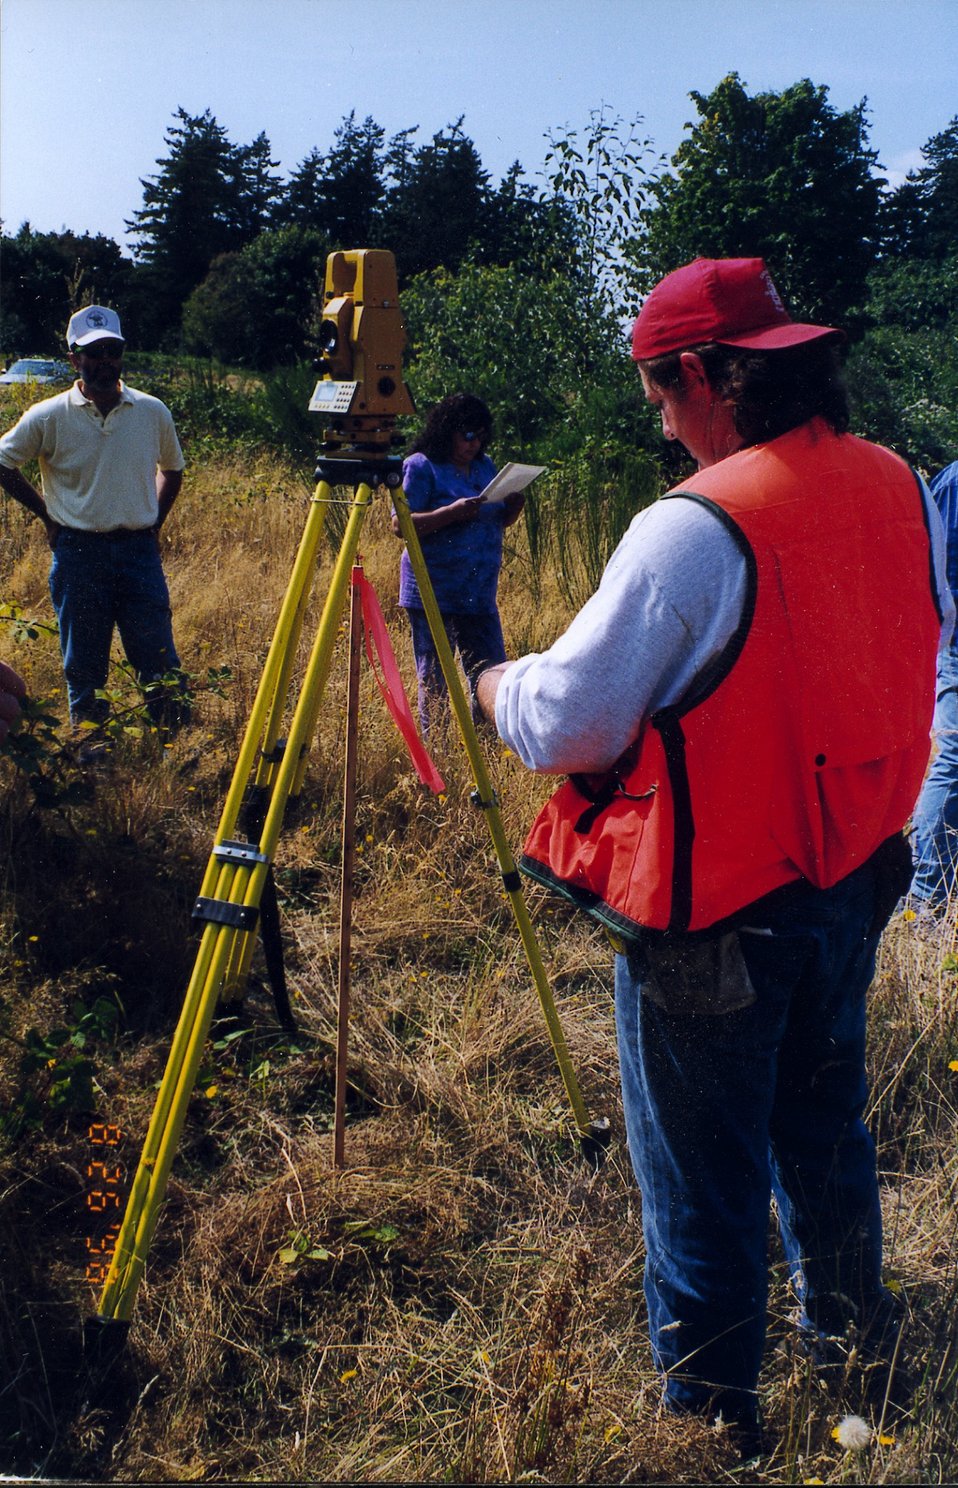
Cadastral Surveys Idaho Bureau of Land Management